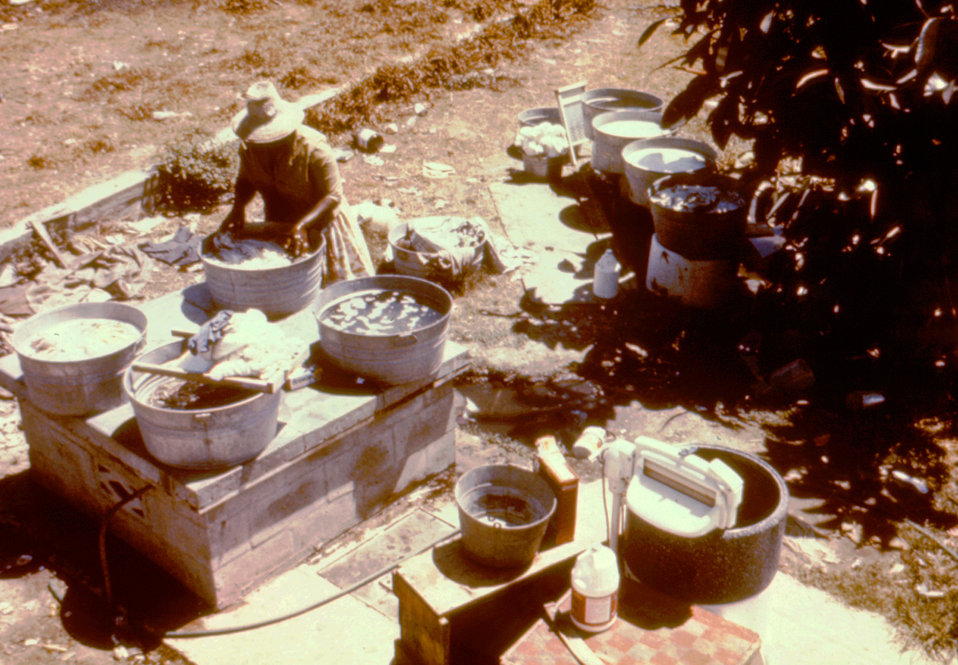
This was part of a series used to familiarize public health inspectors with sanitation conditions in migrant worker camps.